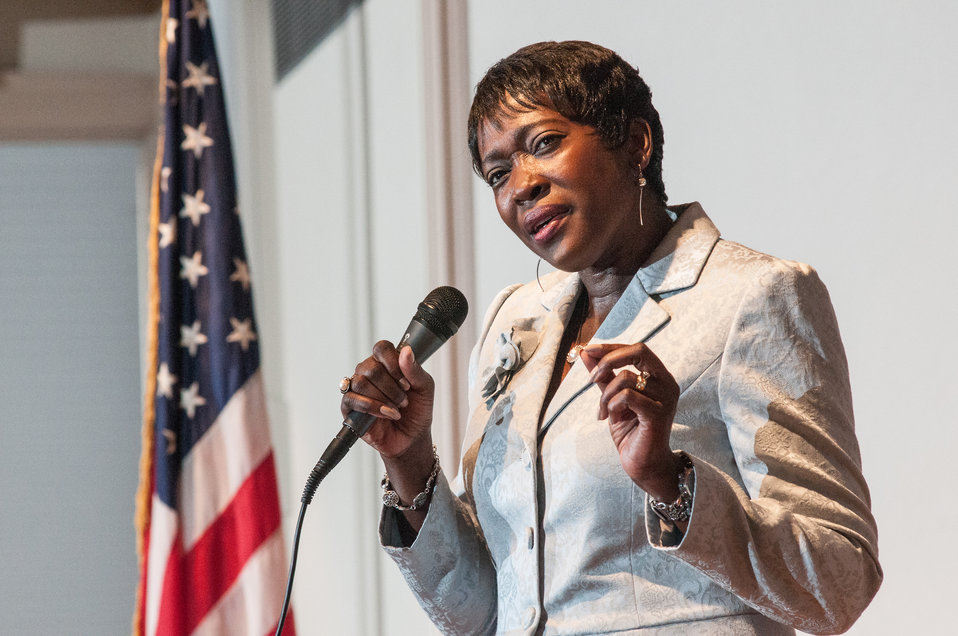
U.S. Department of Agriculture (USDA) Departmental Management Office of Advocacy and Outreach Director Carolyn Parker provided opening remarks to approximately 300 youth members, Extension Educators and 4-H Adult Volunteers from across the nation, as well as U.S. Territories at the 2013 National 4-H Conference, on Monday, April 8, 2013 in Chevy Chase, MD. National Institute of Food and Agriculture Director Dr. Sonny Ramaswamy provide additional remarks and Secretary Tom Vilsack will deliver the keynote address. The youth delegates are in grades 10-12 (15-19 years old). The purpose of the conference is to 1) engage 4-H youth in personal development experiences that will increase knowledge, resources, and skills; 2) discuss topics affecting youth and 4-H programming nationwide; and 3) empower and mobilize 4-H youth to create positive social change in their communities in a meaningful and genuine way. The conference also reinforces the rich history of 4-H and its valuable tie to USDA, Cooperative Extension and the Land-Grant University System.